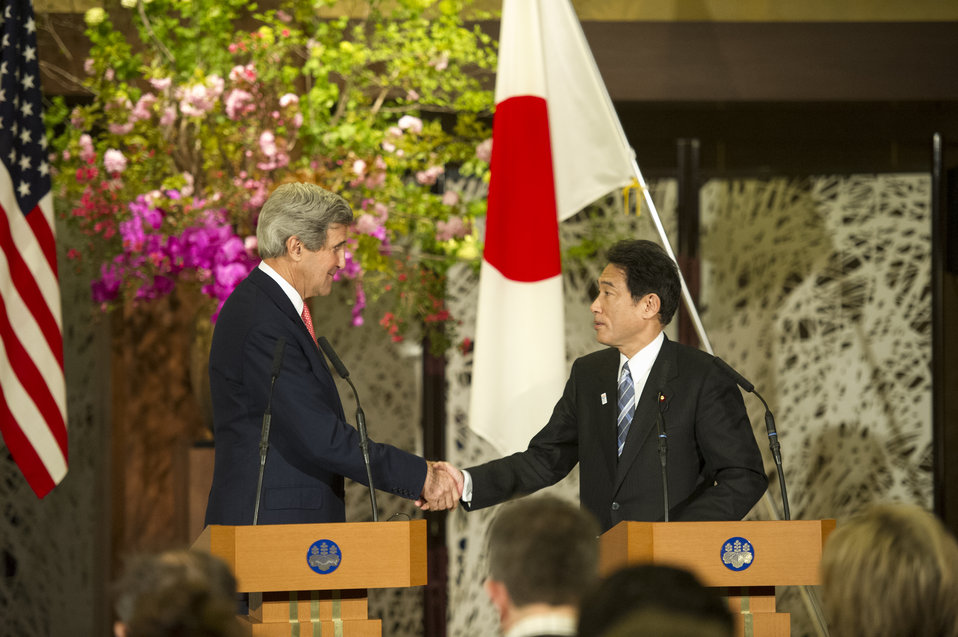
Secretary Kerry With Japan’s Foreign Minister Kishida

U.S. Secretary of State John Kerry and Japanese Minister for Foreign Affairs Fumio Kishida conclude their joint press conference in Tokyo, Japan, on April 14, 2013.